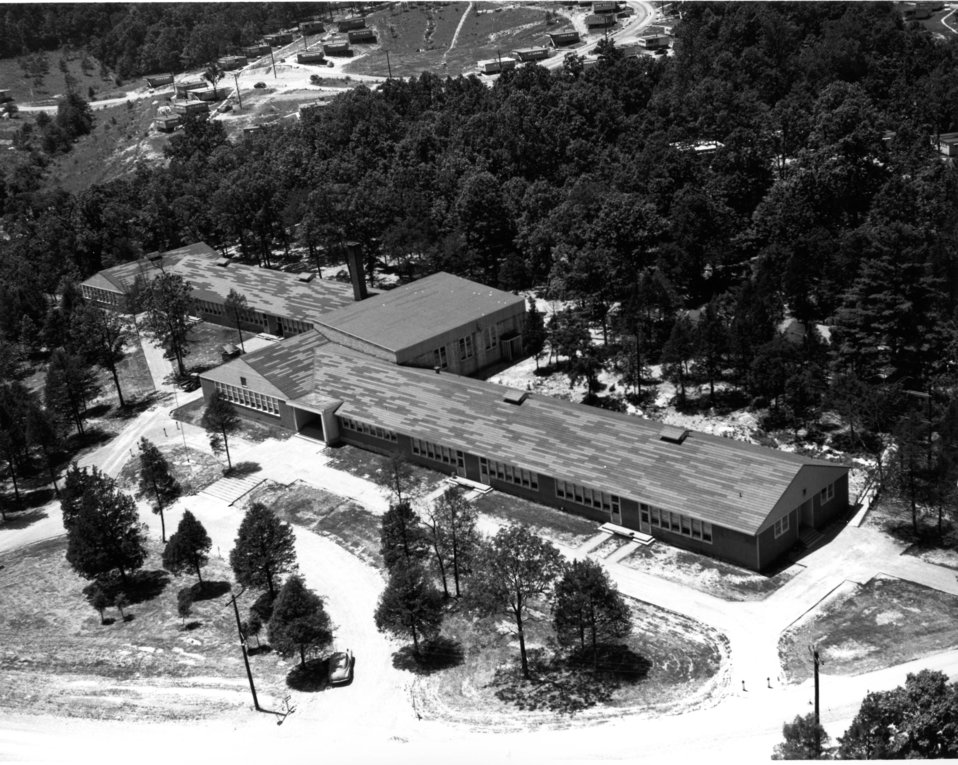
Schools at Oak Ridge